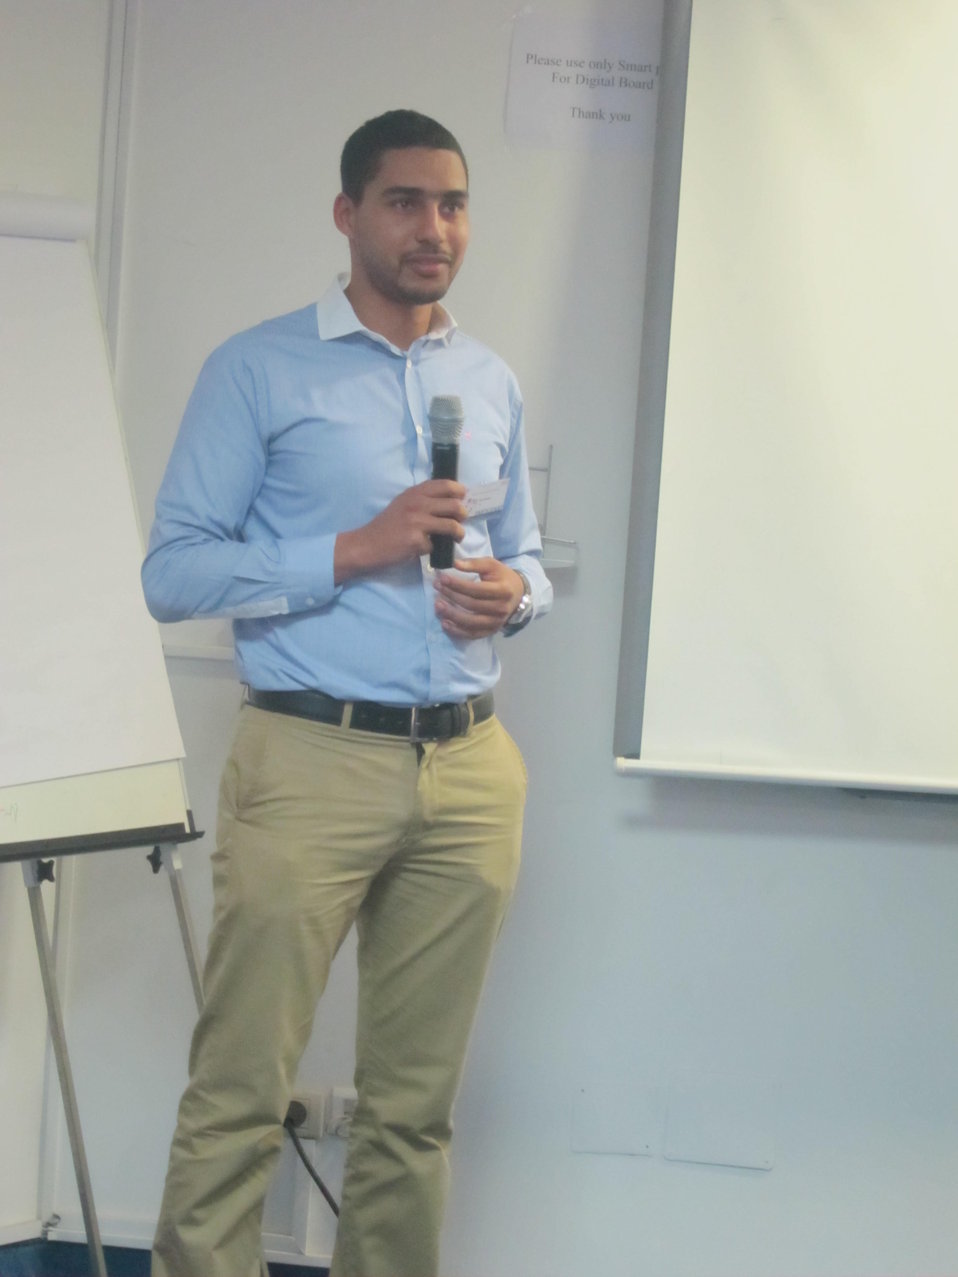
Nizar Manzli Discusses His Project

Nizar Manzli, founder of iBex TV and winner for the Wiki Start-Up Six-Month Incubation, discusses his project in Tunis, Tunisia, on November 2, 2011.